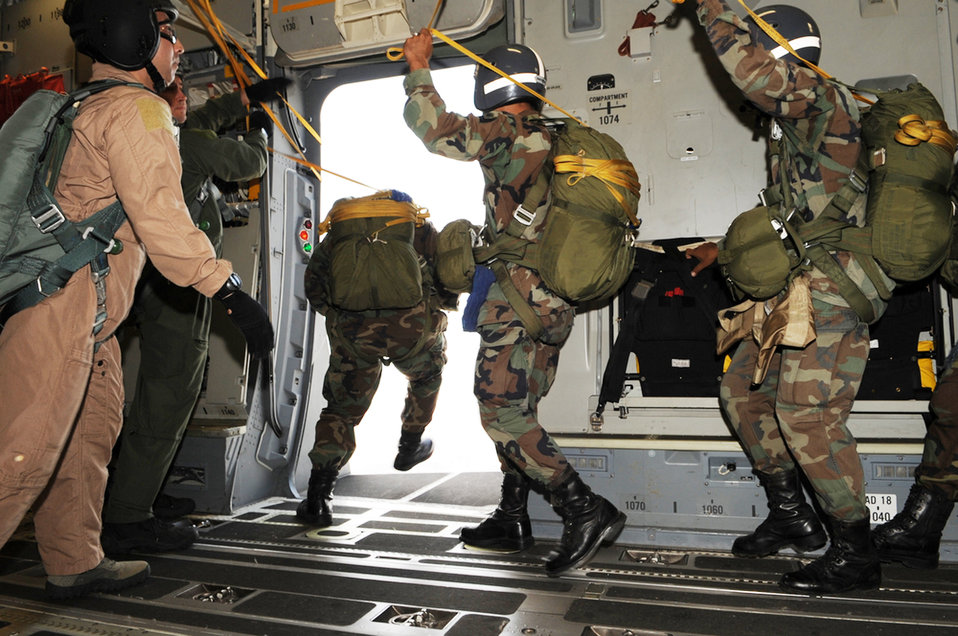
COPE TIGER 2010

A Royal Thai Air Force parachute team member jumps from a C-17 Globemaster III during Cope Tiger 2010 March 3, 2010 at Dom Muang Royal Thai Air Force Base, Thailand.